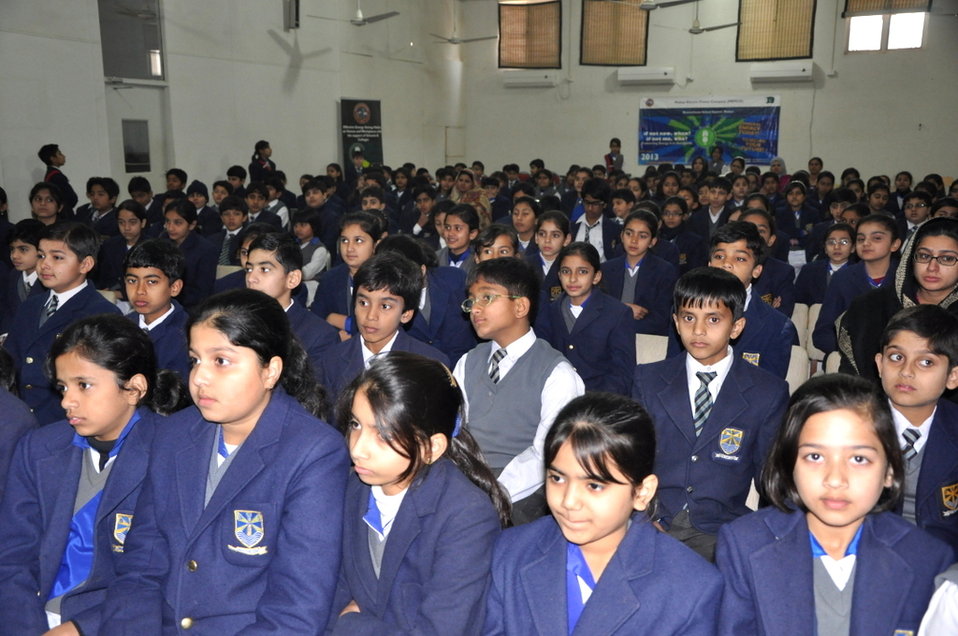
USAID Power Distribution Program-Energy Conservation Seminar Beaconhouse School System, Multan

Multan, January 21, 2013 - the USAID Power Distribution Program with the collaboration of MEPCO, held an Energy Conservation Seminar Beaconhouse School System, Multan
The purpose of the seminar was to:
• Inform students about the USAID Power Distribution Program and the role of Distribution companies in Pakistan.
• Educate students and teachers about the effective energy saving methods they can apply at homes, schools and workplaces.
More than 1000 students along with principal & teachers attended the seminar & participated actively in the quiz session. For the better know how of the students regarding MEPCO & energy sector of Pakistan, a documentary was played during the seminar